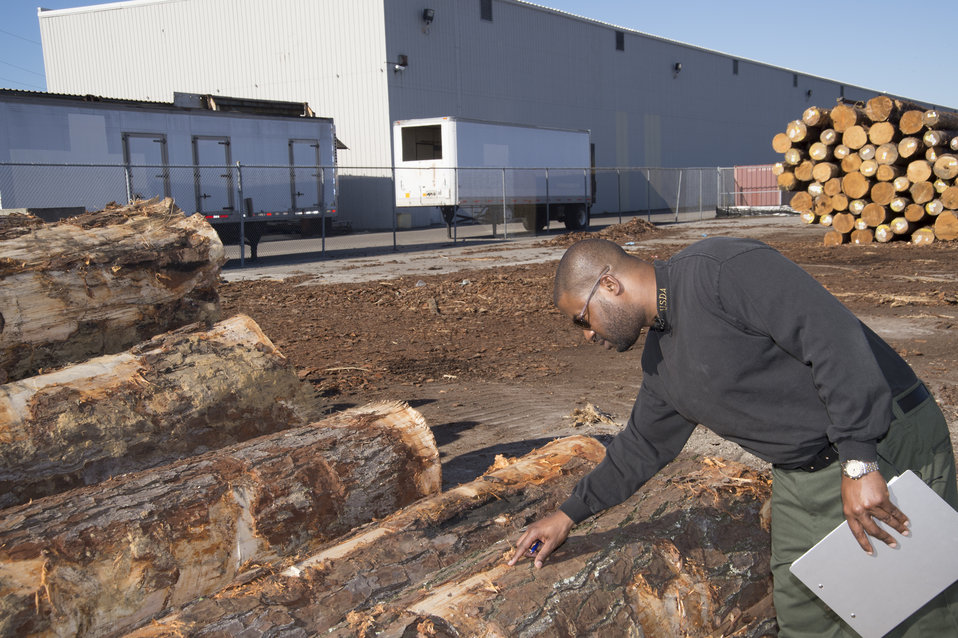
U.S. Department of Agriculture’s (USDA) Animal and Plant Health Inspection Service (APHIS) employee inspects fumigated logs near the Port of New Orleans in New Orleans, LA on Wednesday, Nov. 20, 2013. The fumigation process prevents the spread of any bacteria or insect that might cause harm to a foreign country’s agriculture.